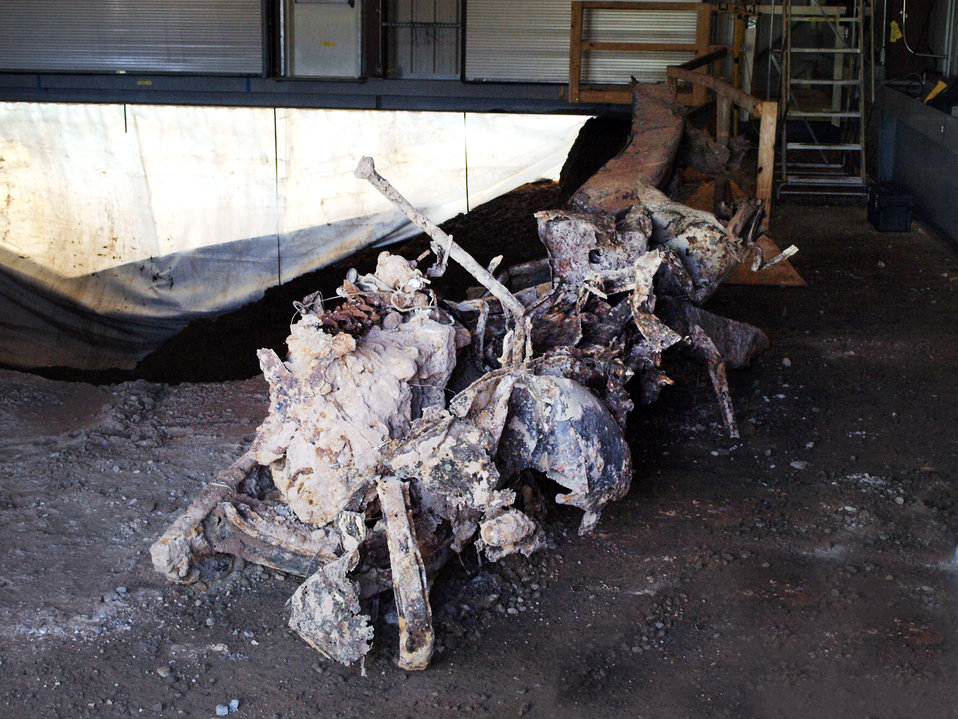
Remnants of 1940s military truck buried in a Manhattan Project-era landfill

The remnants of a 1940s military truck unearthed at the Material Disposal Area B cleanup site.

The truck was unearthed inside a sealed building where digging is taking place at Material Disposal Area B (MDA-B), the Lab’s first hazardous and radioactive waste landfill.
MDA-B was used from 1944 to 1948. The rusting hulk is believed to be a Chevrolet military truck. It’s barely recognizable, but a fender, an inline six-cylinder engine block, a steering column, and part of the cab are visible.